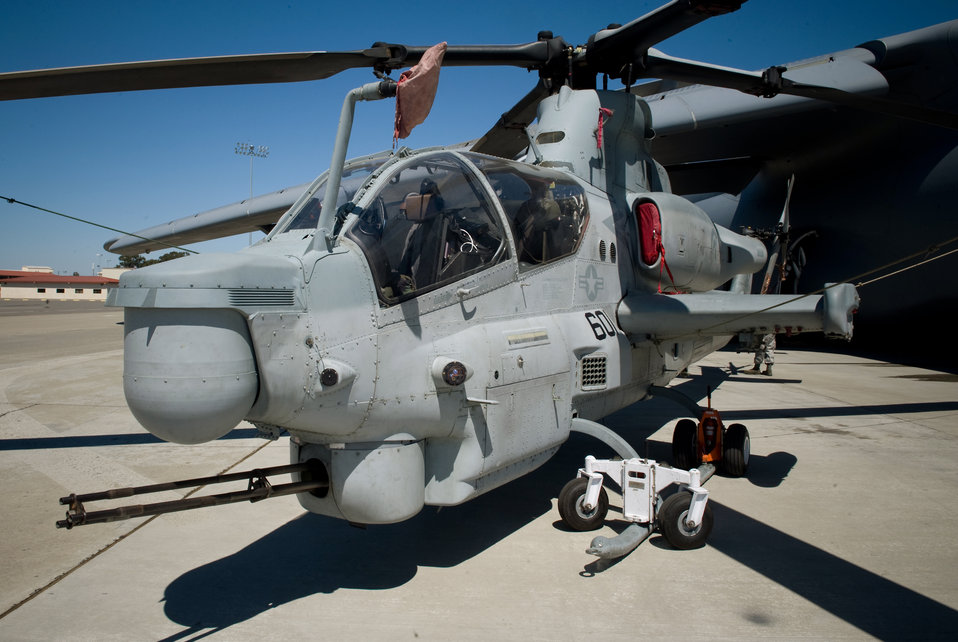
C-5 - helicopter load exercise

A Marine AH-1Z Super Cobra attack helicopter is ready and configured to be test-loaded into a C-5C Galaxy. Airmen from Travis Air Force Base, Calif., and Marines from Camp Pendleton, Calif., came together at Travis AFB April 20 to determine how the helicopter best fit into the cargo bay of the C-5 and how many could be loaded at one time. The goal is to get helicopters into the area of responsibility faster and ultimately into the fight.